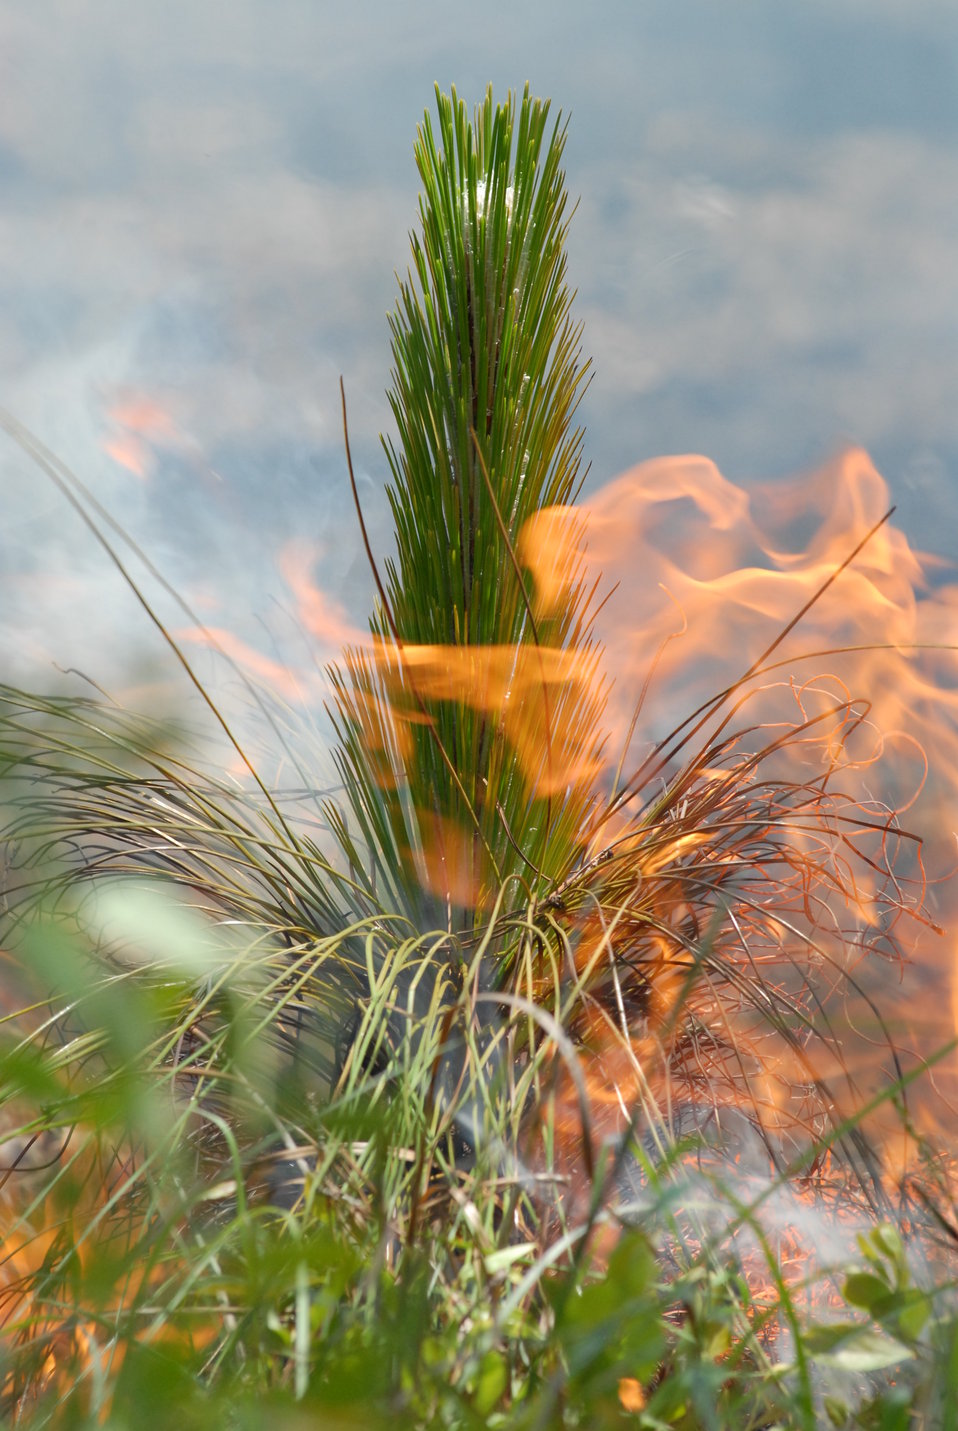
Longleaf pine on fire

Longleaf pine forests need fire. Fires remove competing woody vegetation and release nutrients, allowing the rich diversity of plant and animal species found in longleaf ecosystems to thrive. As temperatures rise in a changing climate, wildfires are expected to increase, making the longleaf pine a good bet for the future.